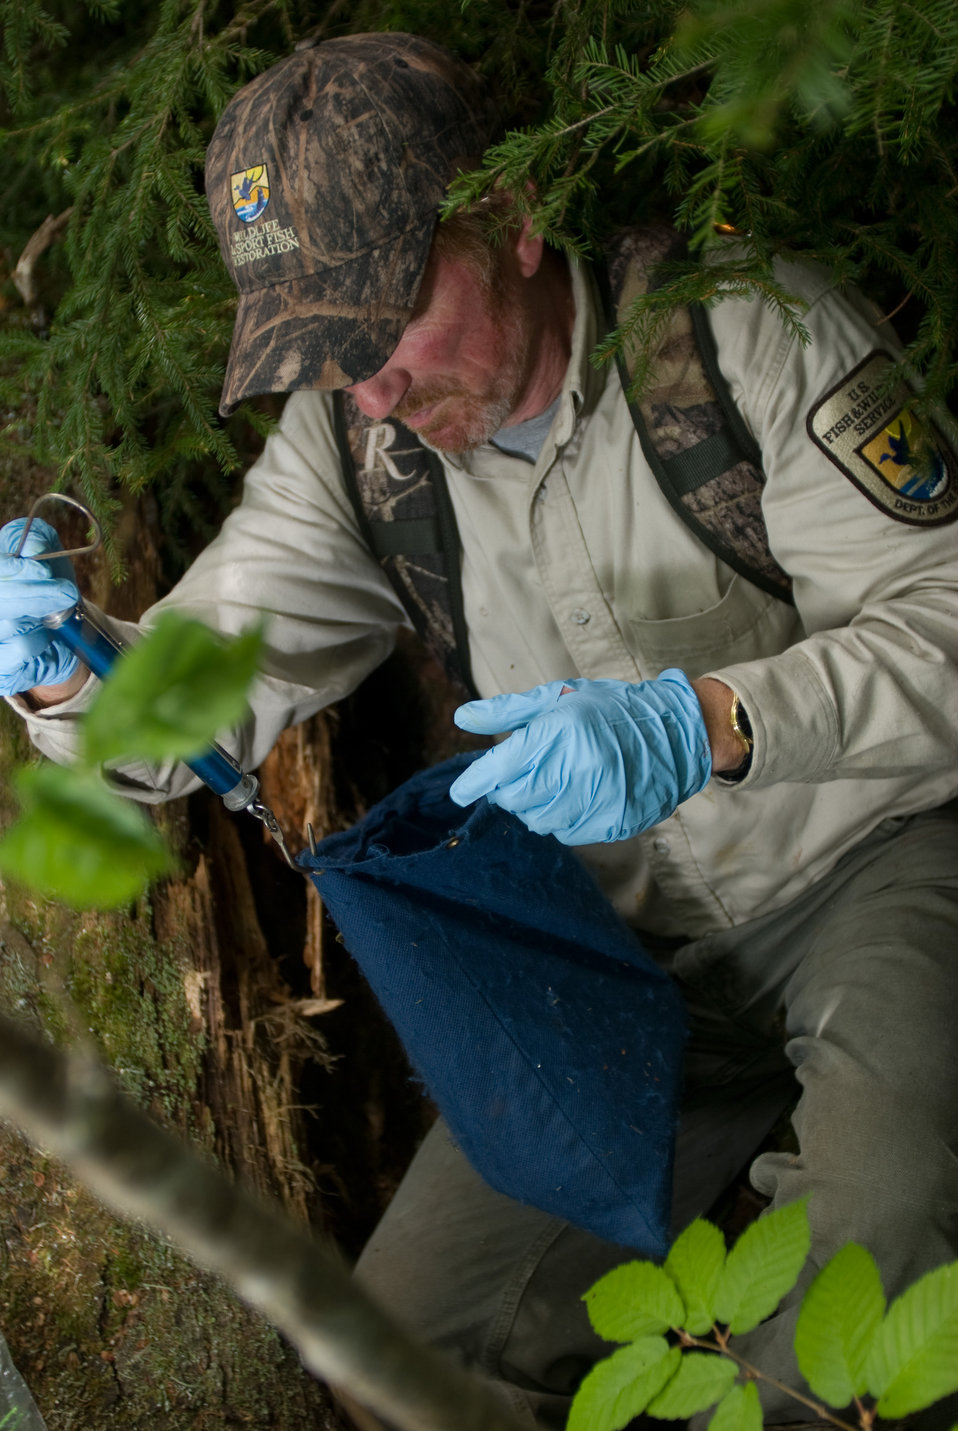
Weighing a kitten

John Organ of the U.S. Fish and Wildlife Service weighs a Canada Lynx kitten.